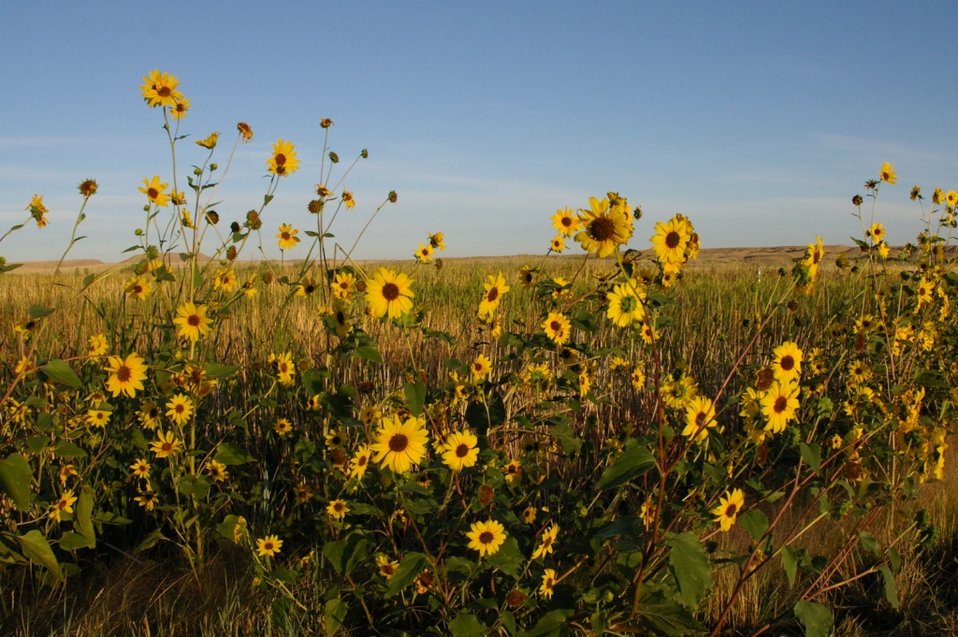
Sunflowers at Ouray National Wildlife Refuge in Utah.